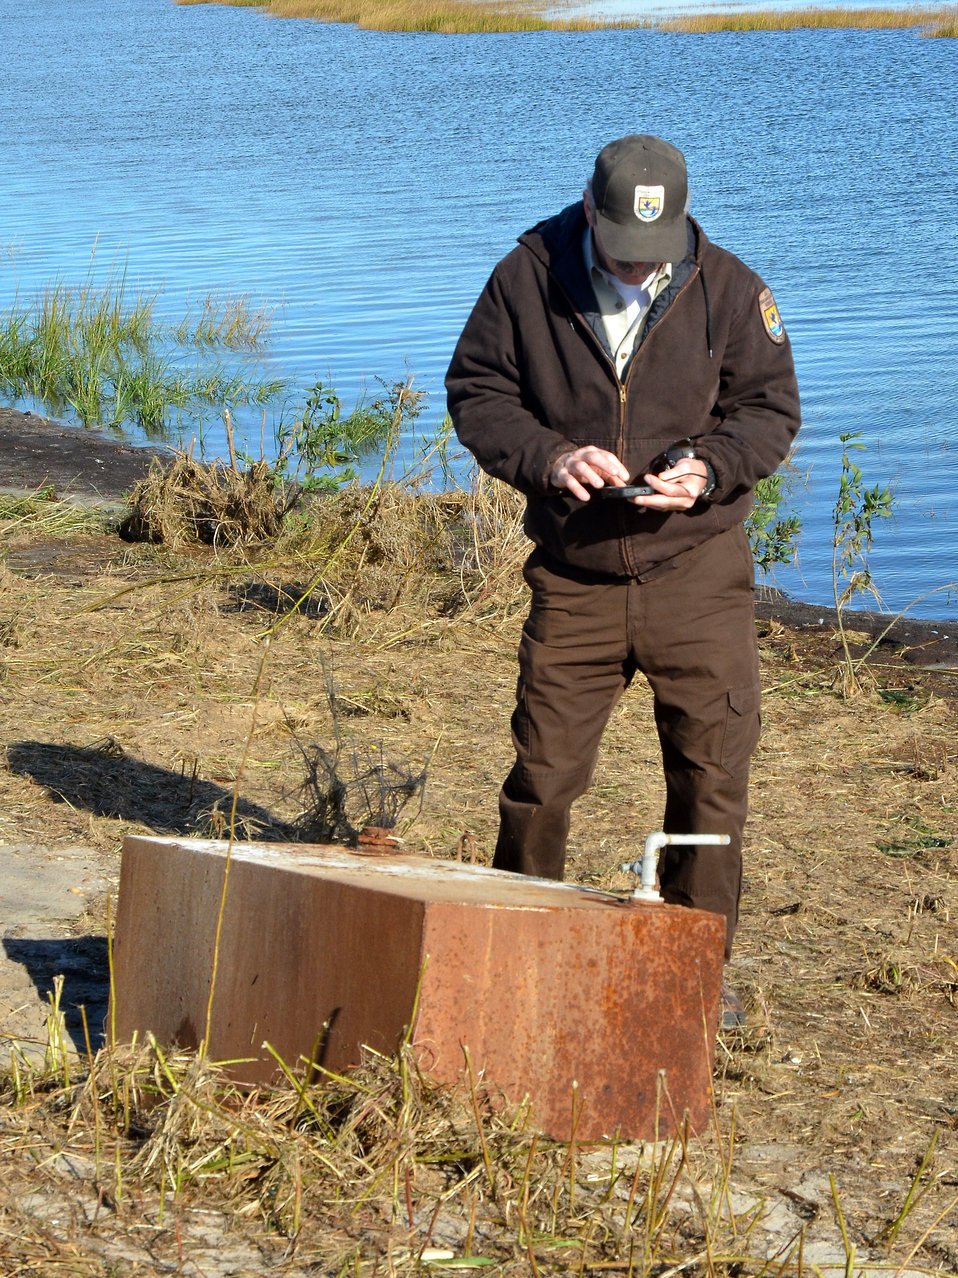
Assessing the damage (NJ)

A storage tank on the north dike, as an employee assesses damages to the dikes and impoundments at Edwin B. Forsythe National Wildlife Refuge after Hurricane Sandy.